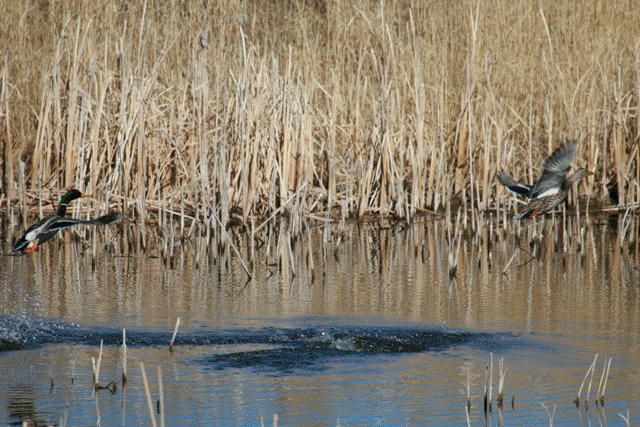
Mallard Pair

Both the female and male Mallards have distinct purple speculum edged with white on their wings, prominent in flight or at rest.